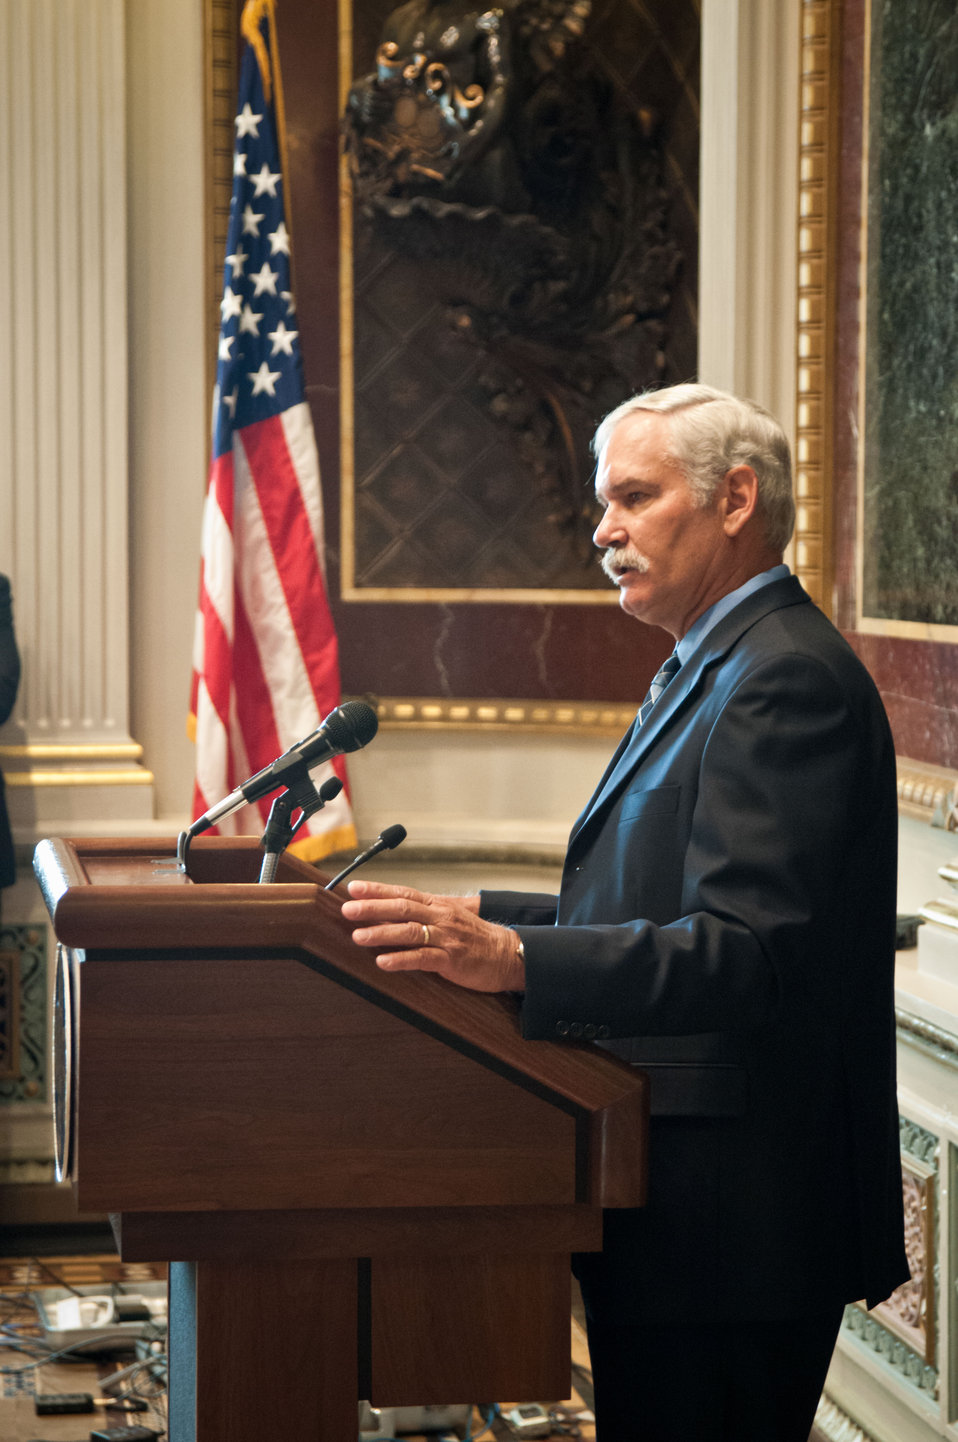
Farm and Foreign Agriculture Services Acting Under Secretary Michael Scuse spoke about American production agriculture at the Spring National Association of Farm Broadcasters (NAFB), “Washington Watch” member retreat in Washington, D.C. This year the meeting was held in the Eisenhower Executive Office Building, Indian Treaty Room on Tuesday, April 24, 2012, featuring United Sates Department of Agriculture and Obama Administration officials. This opportunity provides an occasion to highlight efforts to rebuild and revitalize rural America, including efforts for the agricultural community. NAFB is the recognized and trusted source of agricultural and rural lifestyle information for America with approximately 200 members who broadcast via radio in nearly every state in the country.